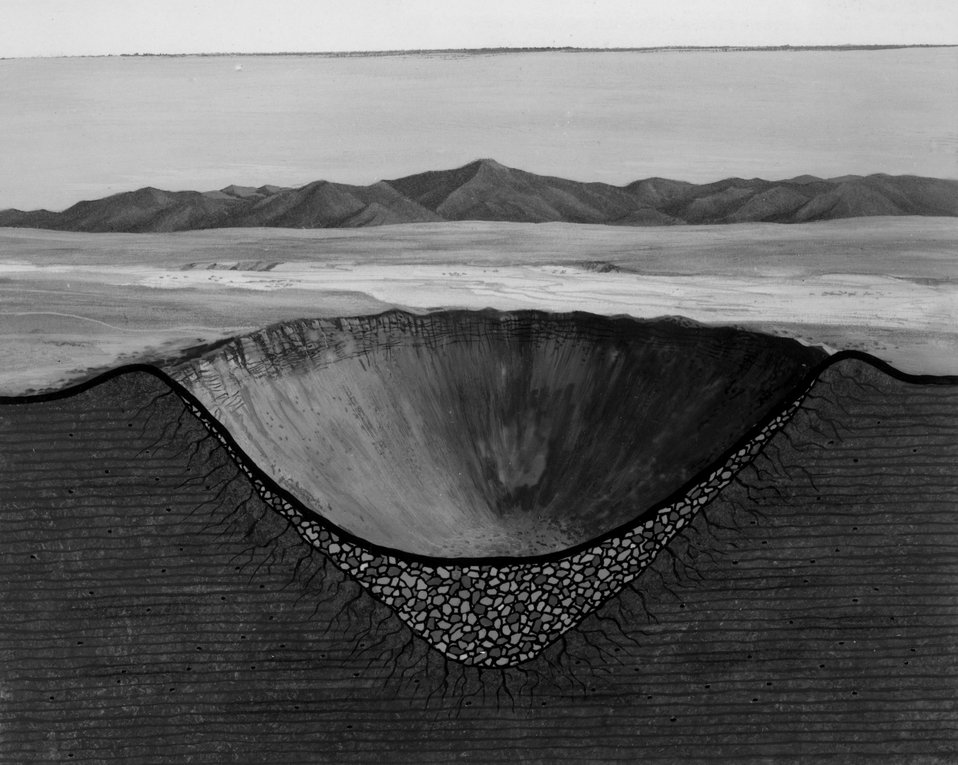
Artist's concept of the cross-section of a nuclear crater showing the broken rock and fractured area below the floor of the crater. c. 1966